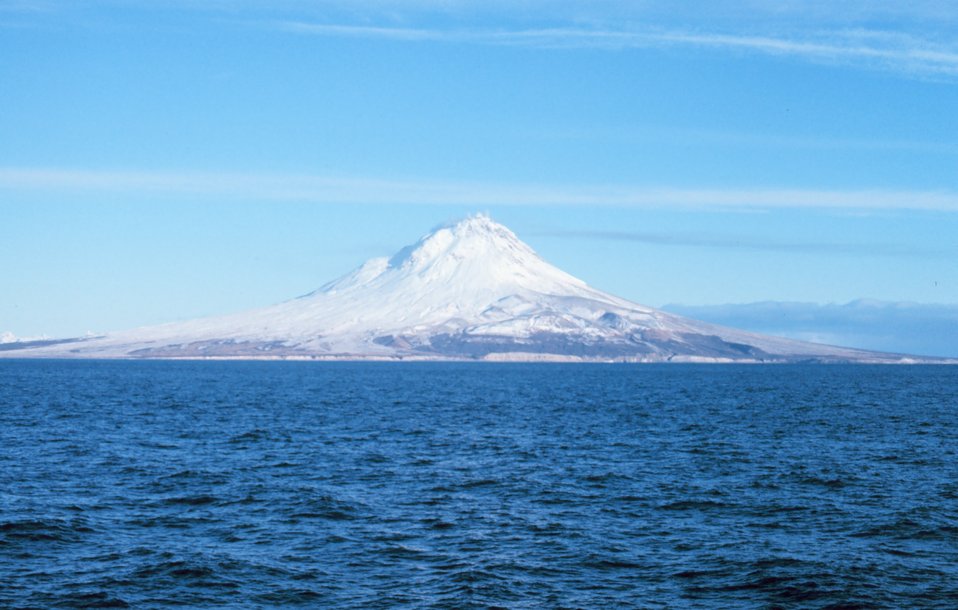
Augustine Volcano in Lower Cook Inlet